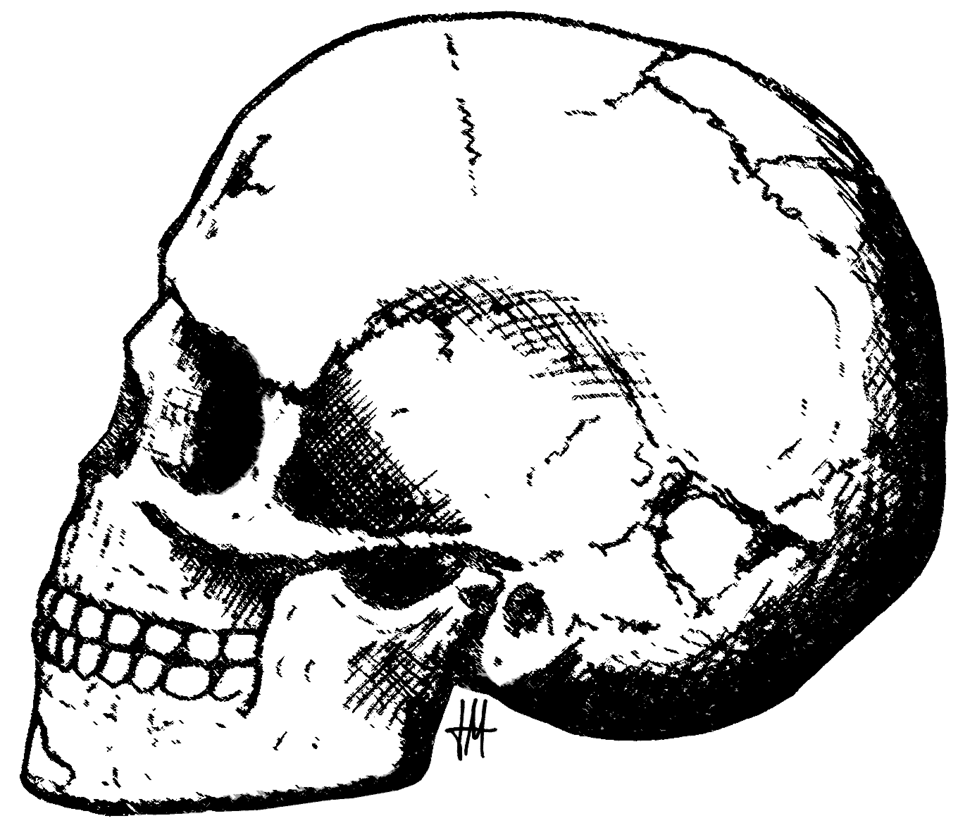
Early modern skull so-called Qafzeh 11 (a child 11 years old), in the Carmel Range (Israel). ESR dates for Qafzeh (90,000 BP) Español: Cráneo de Moderno Primitivo de Qafzeh nº 11 (un niño de 11 años), monte Carmelo (Israel). Data de unos 90 000 adC por medio de ESR.